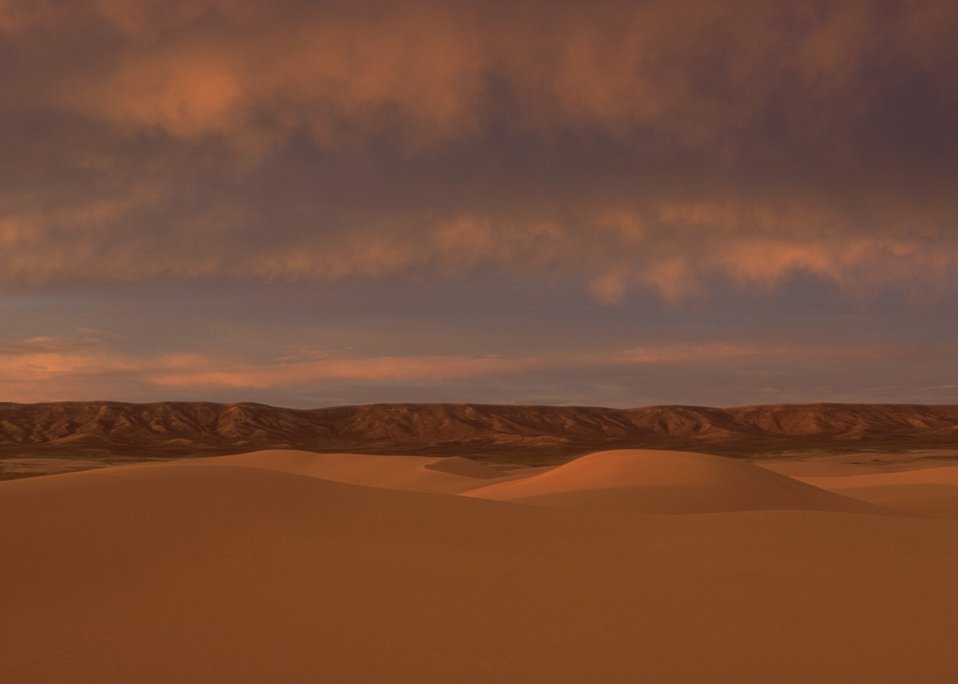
Passing storm at sunset over OHV Sand Dunes Area, Rock Springs Field Office.